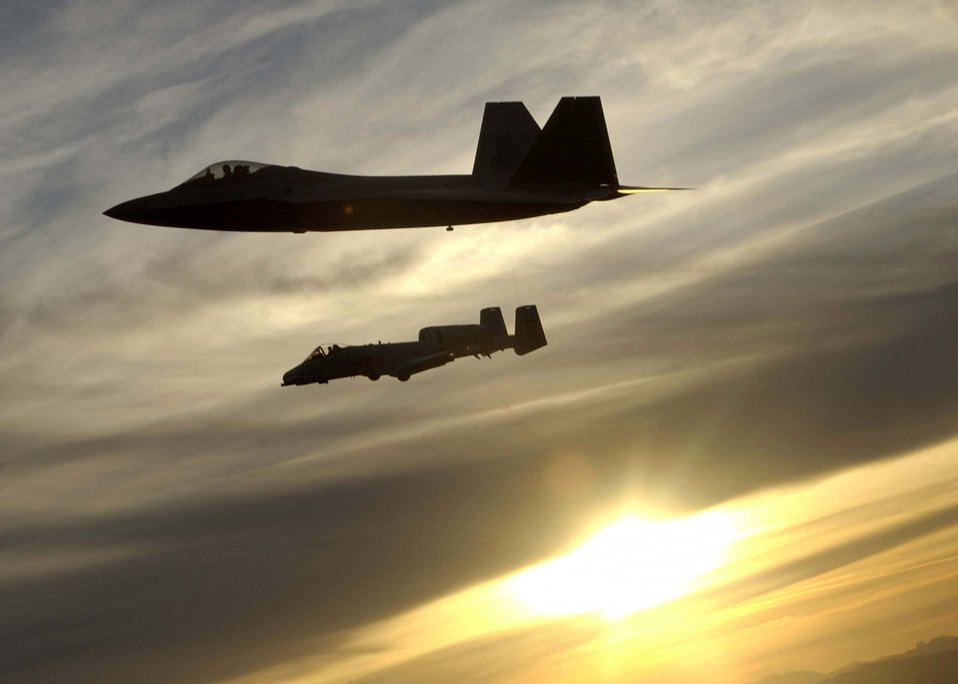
Heritage flight

An F-22A Raptor from Langley Air Force Base, Va., and an A-10 Thunderbolt II from Pope AFB, N.C., fly over Tucson, Ariz., Sunday, March 5, 2006, during the 2006 Heritage Conference. The conference combines different U.S. aircraft from more than 60 years of aviation history to ensure certification in performing air shows worldwide.